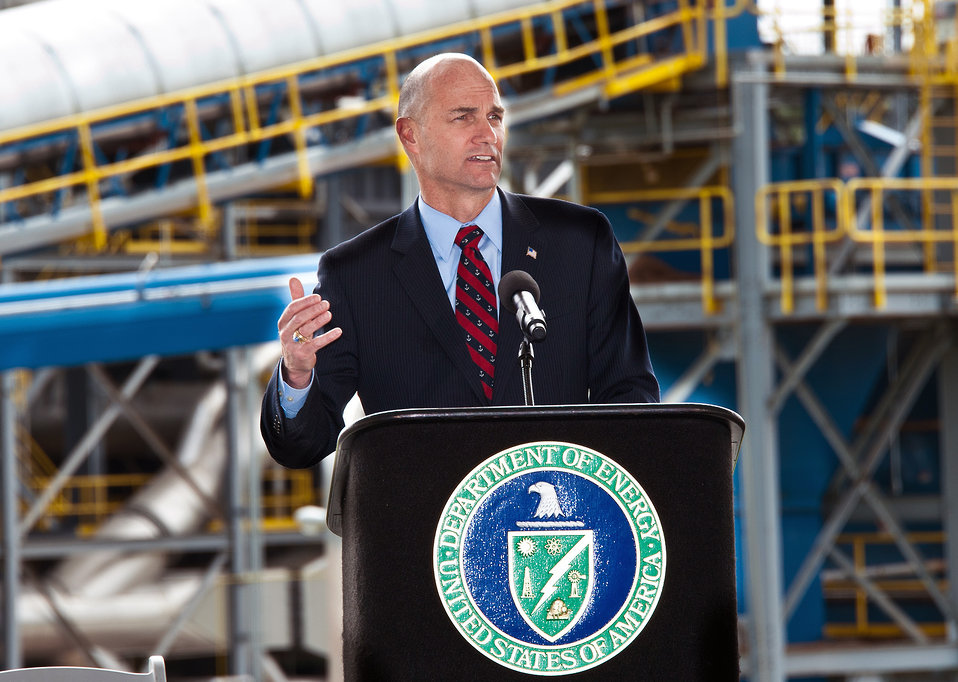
EM Celebrates Ribbon Cutting for New Biomass Plant at Savannah River Site

Under Secretary of Energy Thomas D’Agostino recently joined U.S. Representative Joe Wilson (R-SC) and other senior officials from the Department of Energy and Ameresco Federal Solutions, Inc., a leading energy efficiency and renewable energy company, to mark the successful operational startup of a new $795M renewable energy fueled facility built at the Savannah River Site, in Aiken, S.C.